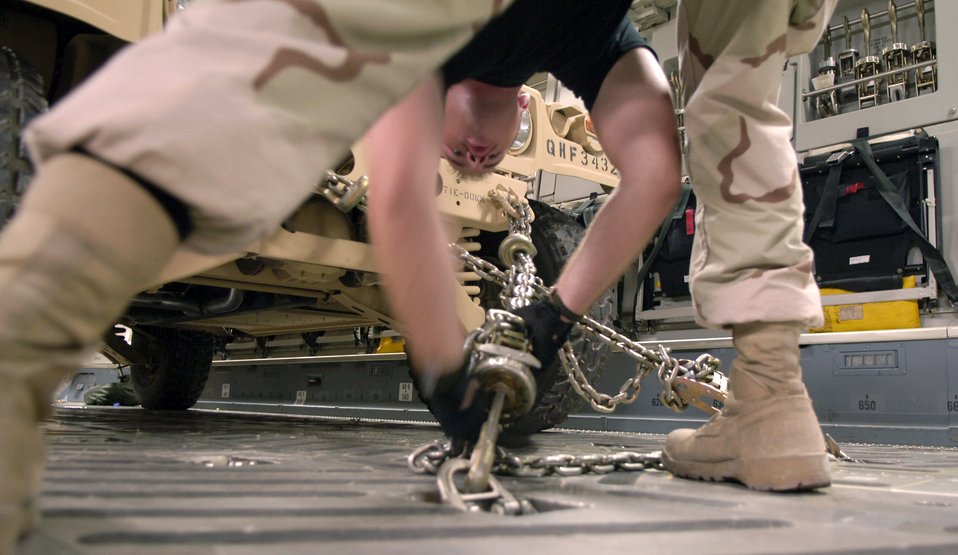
Preparing for delivery

Airman 1st Class Wayne Groeblinghoff tightens a chain securing a Humvee for transport at a forward operating location in Southwest Asia on Aug. 5. A C-17 Globemaster III from the 816th Expeditionary Airlift Squadron transported the vehicle to Afghanistan in support of Operation Enduring Freedom. Airman Groeblinghoff is with the 8th Expeditionary Aircraft Maintenance Squadron.